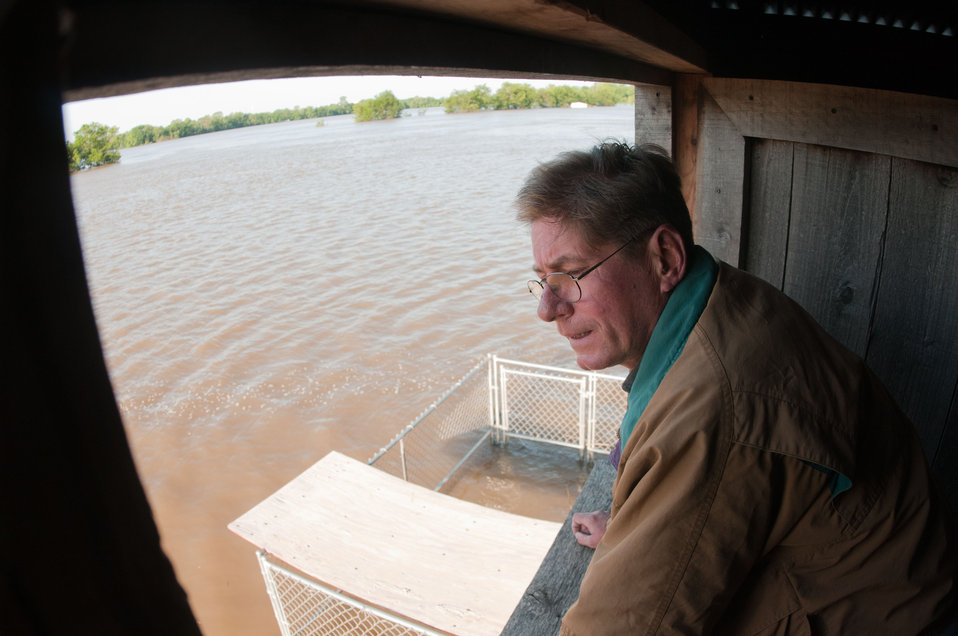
Joe Higdon reflects on the devastation his ranch sustained when Mississippi River floods swept over President's Island, TN, on Sunday, May 15. 2011.